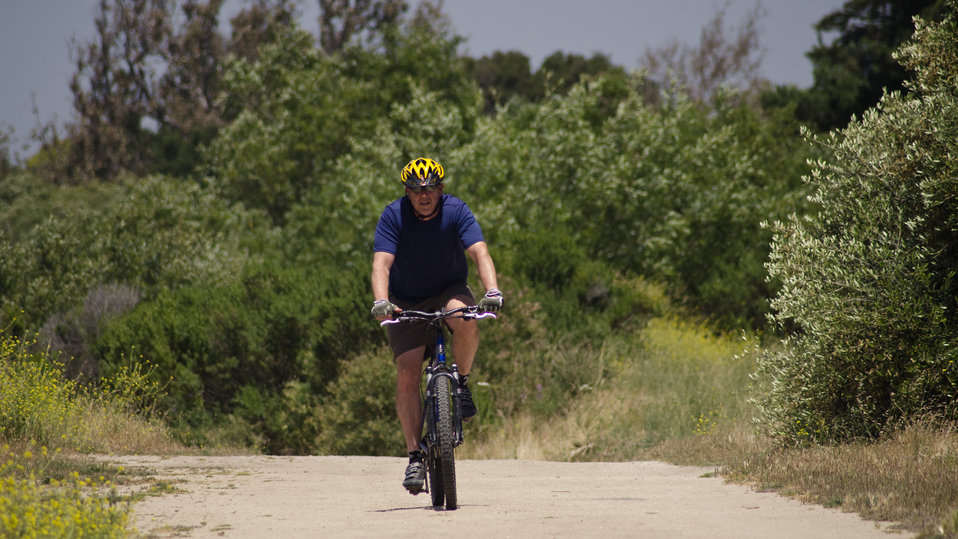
Mr. Peter Preston rides along Toro Creek Road in the Fort Ord Park Land, Salinas, CA., on Thursday, June 16, 2011. More than 75,000 visitors visit park land each year. On the left, Toro Creek and its riparian zone. The green plants are vital to the stability of this zone. The area between the creek bottom and the land along the bank is an ecosystem that sometimes blocks easy sight of the creek. A combination of deep-rooted trees such as Willow and Oak, and drought tolerant grass and bushes are common for this region of California. They provide organic stabilization of the soil. A functioning riparian zone supports a clean Monterey Bay (eight miles away) by removing sediments and other contaminants; reducing the risk of flooding and associated damage; reducing stream channel and stream bank erosion; increasing available water and stream flow duration by holding water in stream banks and aquifers; supporting a diversity of plant and wildlife species; to name some of the benefits stated in references. This Bureau of Land Management property also allows ranchers to purchase permits allowing their sheep (totaling 1,000 to 2,000) to graze the hills of the 7,200-acre property. The reduction of excess grass reduces fuel for fires. The sheep manure also provides nutrients to help the soil remain healthy. The grass roots reduce erosion on the hillsides.